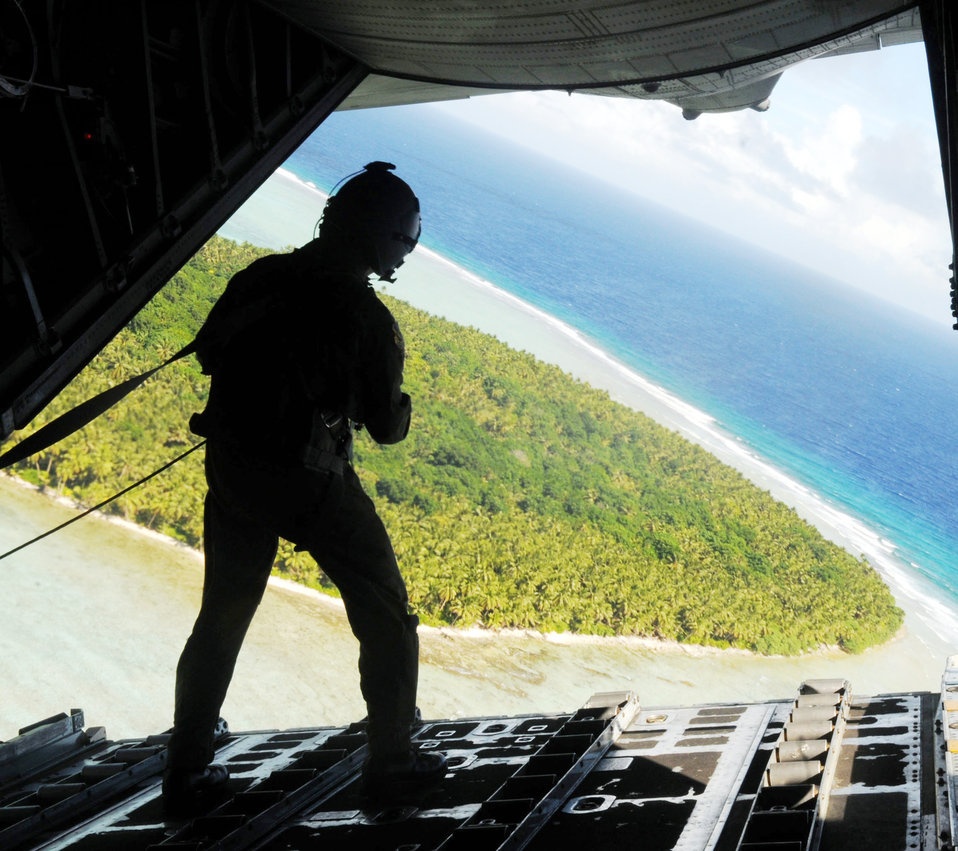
'X' marks the spot

Staff Sgt. Cravenkeo Khamone, a 36th Airlift Squadron loadmaster, spots the drop location for a box of donated goods going to the residents on Chuuk Islands Dec. 16, 2009, in support of Operation Christmas Drop. The operation began in 1952, and Airmen today continue the tradition by delivering supplies to remote islands in the Pacific Ocean.